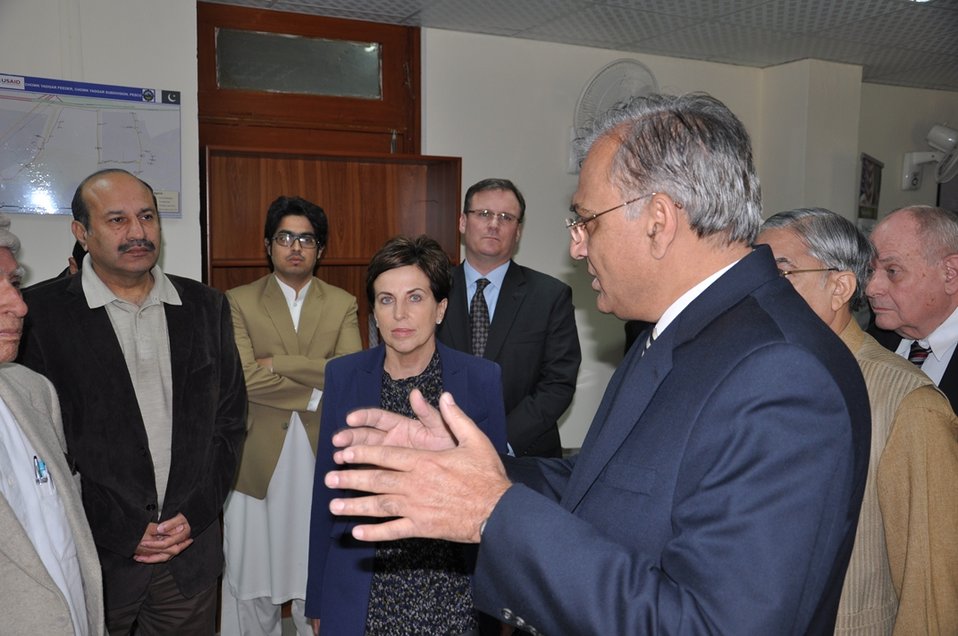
USAID Providing State-of-the-Art Planning and Engineering Equipment to PESCO

The United States is strengthening Pakistan’s energy sector and helping to end energy shortages. In this effort, the USAID Power Distribution Program’s Ewa Szajner was on hand to support the inauguration of a computer center at the Peshawar Electric Supply Company (PESCO). The PESCO CEO and Board of Directors Chairman were also present at the inauguration along with senior management from the USAID Power Distribution Program.